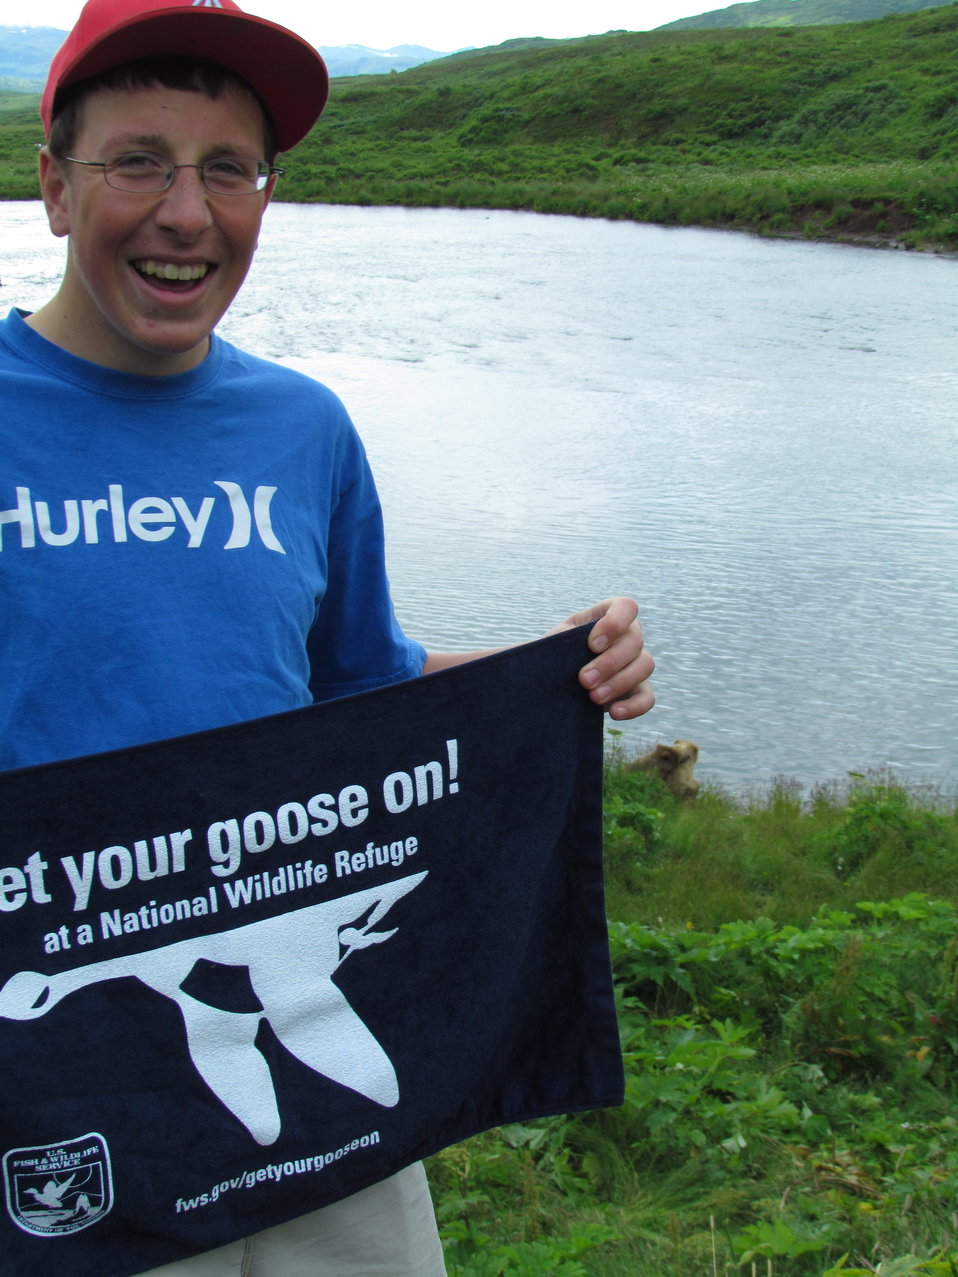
Get Your Goose On! - Alaska Style

Youth Conservation Corp Crew Member Lachlan Kirven, with Kodiak Brown Bear cubs behind him

Credit: Shelly Lawson / USFWS

The Kodiak National Wildlife Refuge is a United States National Wildlife Refuge in the Kodiak Archipelago in southwestern Alaska, United States.

The Kodiak National Wildlife Refuge includes the southwestern two-thirds of Kodiak Island, Uganik Island, the Red Peaks area of Afognak Island and all of Ban Island in the archipelago. It encompasses 1,990,418 acres (8,054.94 km2).[2] The refuge is administered from offices in Kodiak.

The refuge contains seven major rivers and about 100 streams. It is a spawning ground for all six species of Pacific Ocean salmon, trout and several other fish species, as well as a nesting ground for 250 species of bird, many of which feed on salmon. The refuge has only six native species of mammals: Kodiak brown bear, red fox, river otter, ermine, little brown bat and tundra vole. The non-native mammals Sitka deer, mountain goat, Roosevelt elk, snowshoe hare and beaver were introduced to the archipelago between the 1920s and 1950s and are now hunted and trapped.

The climate of the refuge is that of southern Alaska, mild and rainy. Many areas in the refuge are densely forested with Sitka Spruce at lower elevations. There are grasslands in drier areas and at higher elevations. The refuge contains several small glaciers.